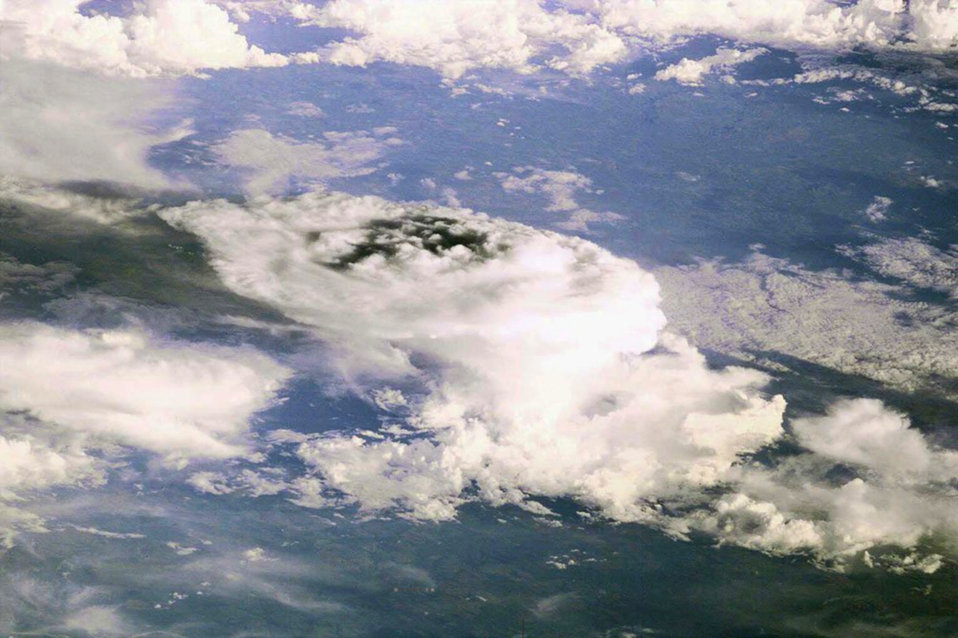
Storm Clouds - First Space Station Image - NASA Solarsystem Collection